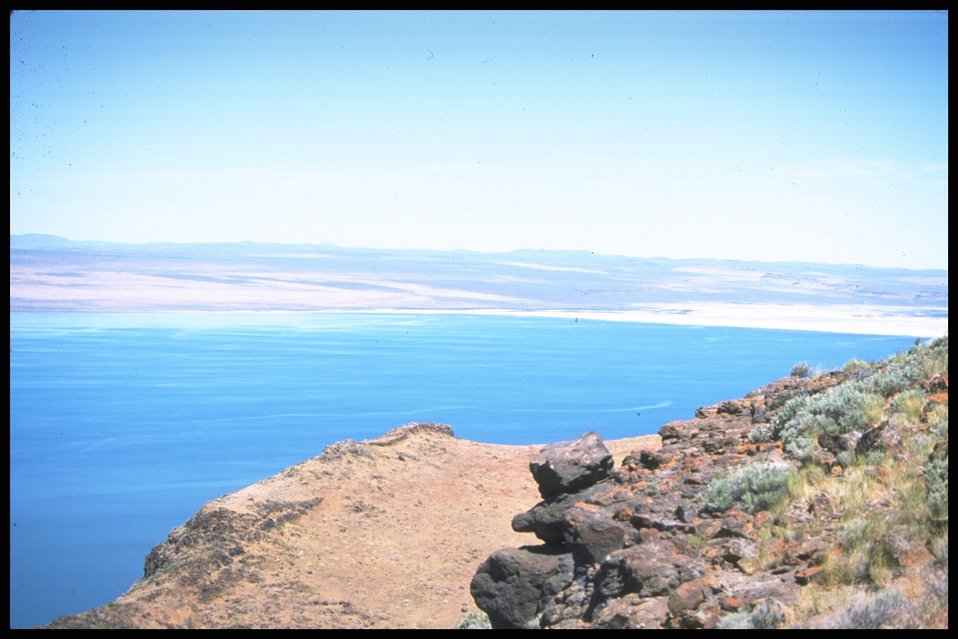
Scenic view of Lake Abert, Lakeview District.